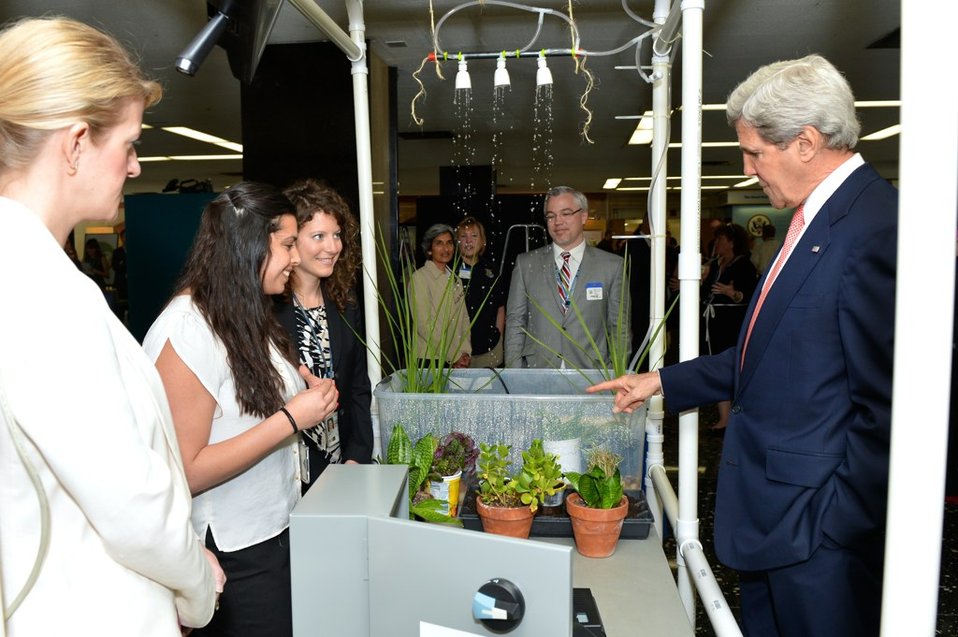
Secretary Kerry Visits the Earth Day Expo

U.S. Secretary of State John Kerry visits the Earth Day Expo at the U.S. Department of State in Washington, D.C., on April 22, 2014.